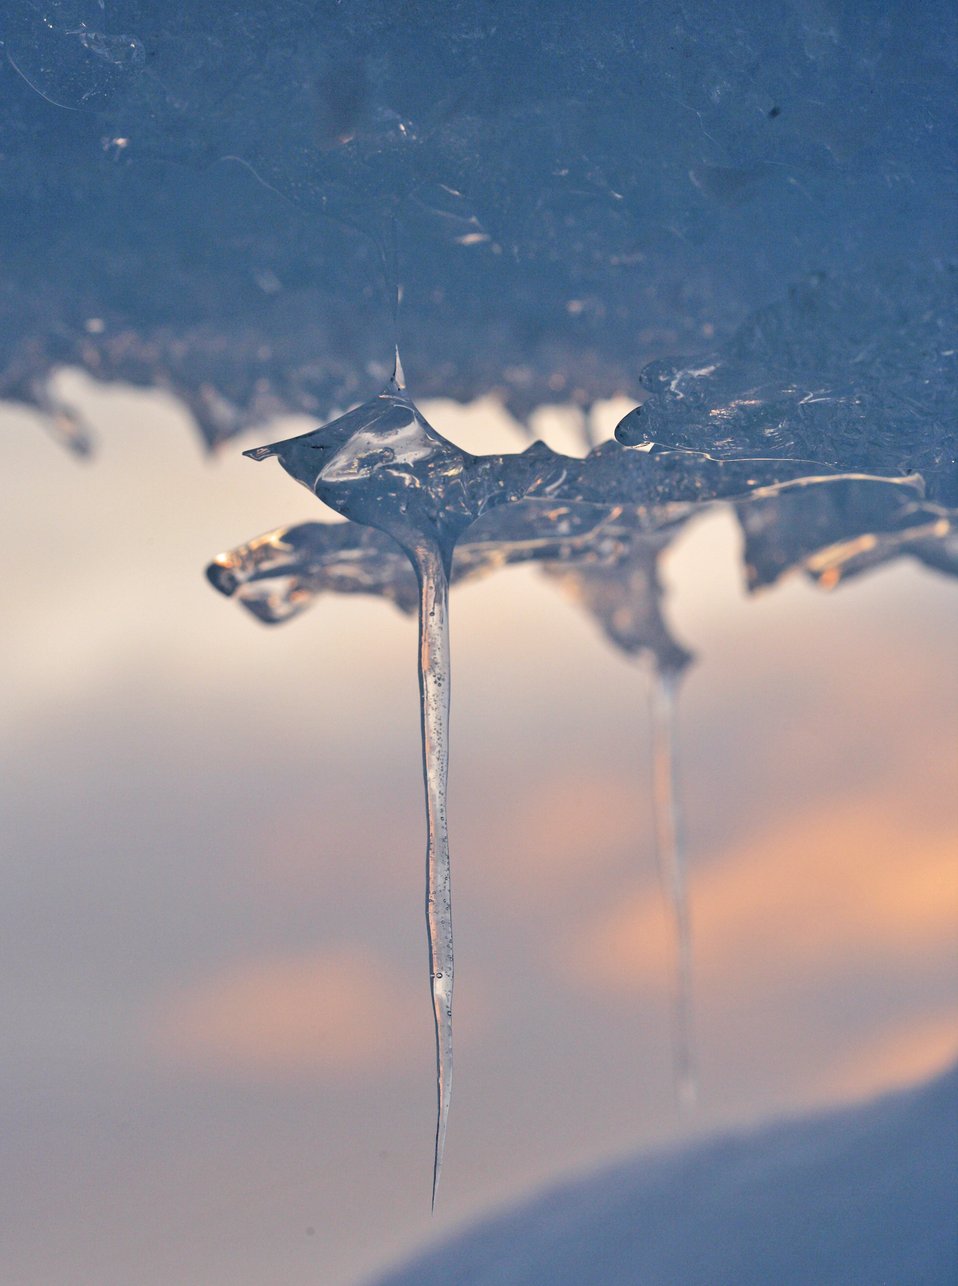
An icicle.